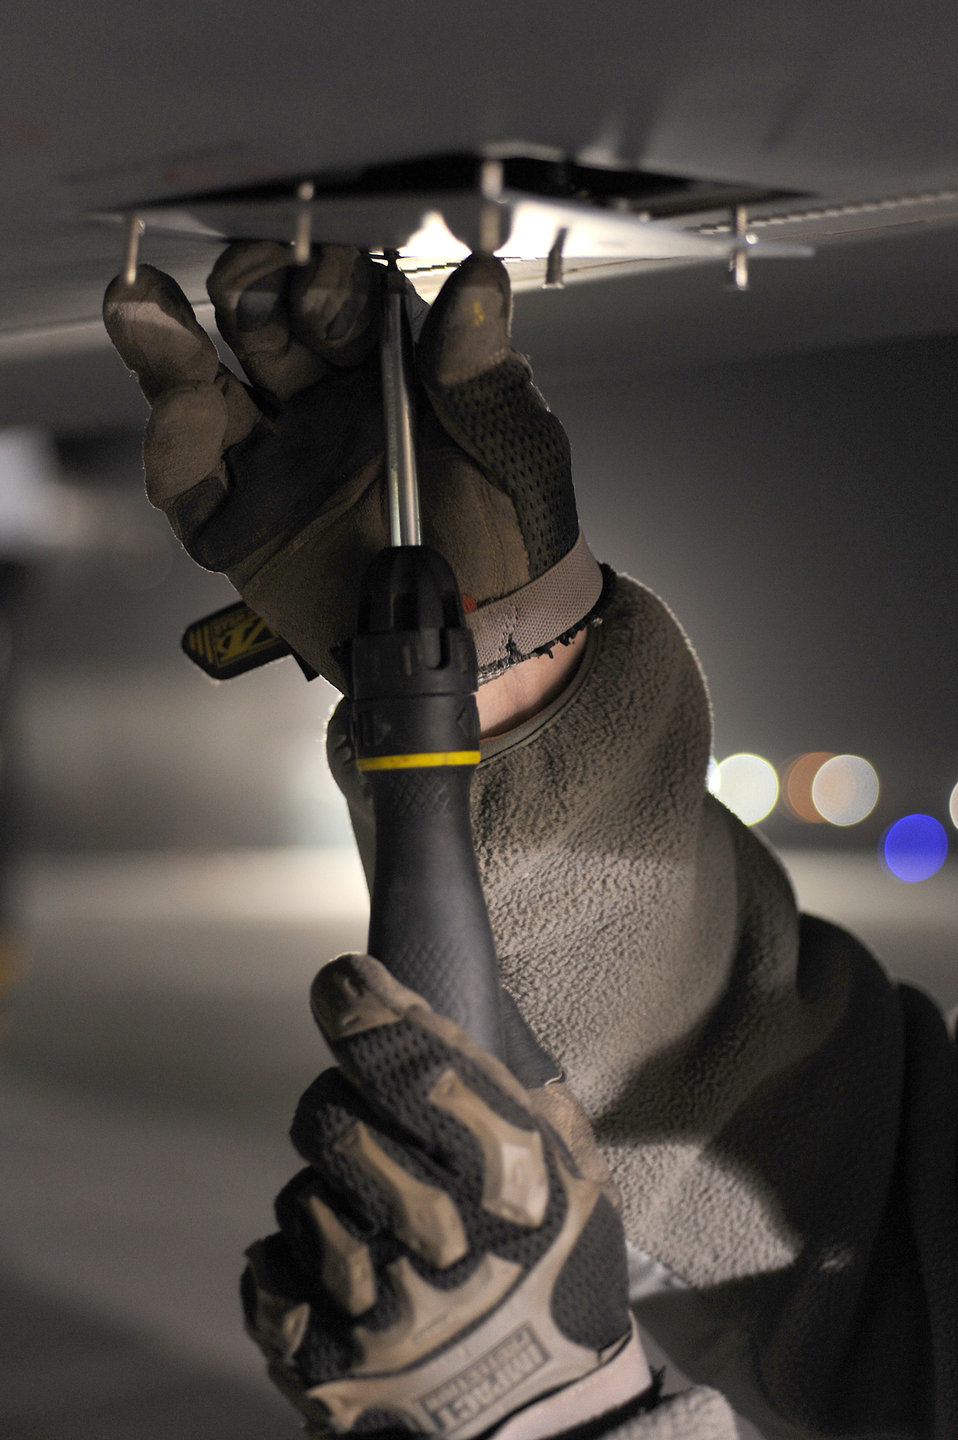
MQ-9 maintenance

A staff sergeant removes a wing access panel on an MQ-9 Reaper during a 100-hour inspection Dec. 1, 2010, at Kandahar Airfield, Afghanistan. Airmen accepted control of the MQ-9 maintenance operations, making them the first military members to work on the aircraft for Operation Enduring Freedom in Afghanistan.